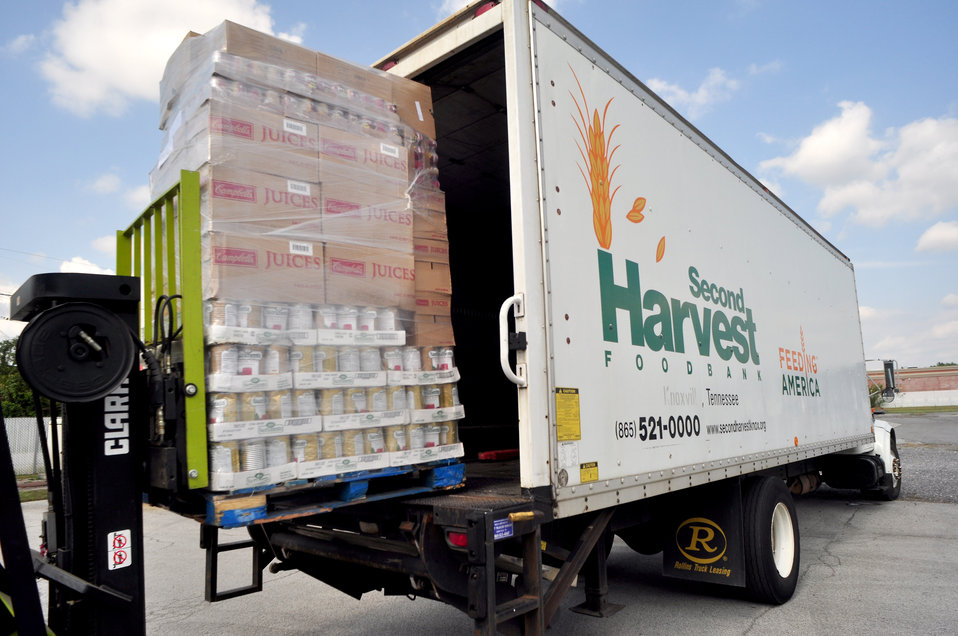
DOE ORO Feds Feed Famlies Food Drive for Second Harvest

13-115a DOE photo Lynn Freeny 9-19-2013 Oak Ridge Tennessee